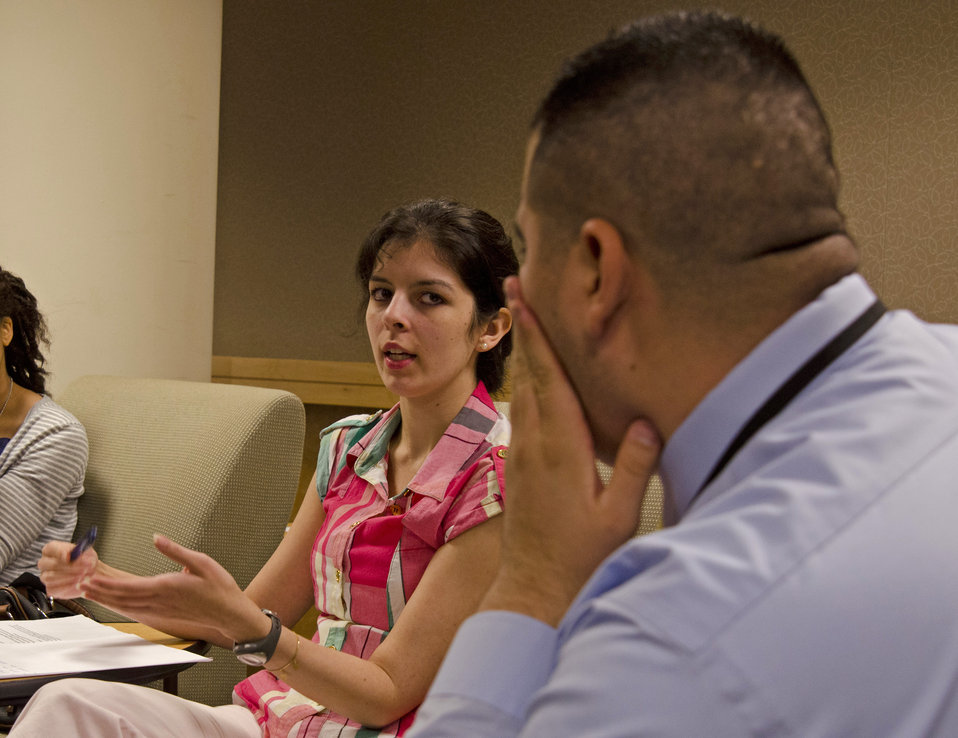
Interns Jessica Mitchum and Victor Martinez discuss how they are going to make their group presentation at the U.S. Department of Agriculture (USDA) Internship Program Listening Session held in USDA’s South Building in Washington, D.C. on Monday, August 7, 2012. The purpose of the USDA Internship Program Listening Session is to provide interns with a forum to express their views about their experiences as a USDA intern. These young people will be among the most promising future USDA leaders and participate in an individual discussion and group session that will develop leadership skills.